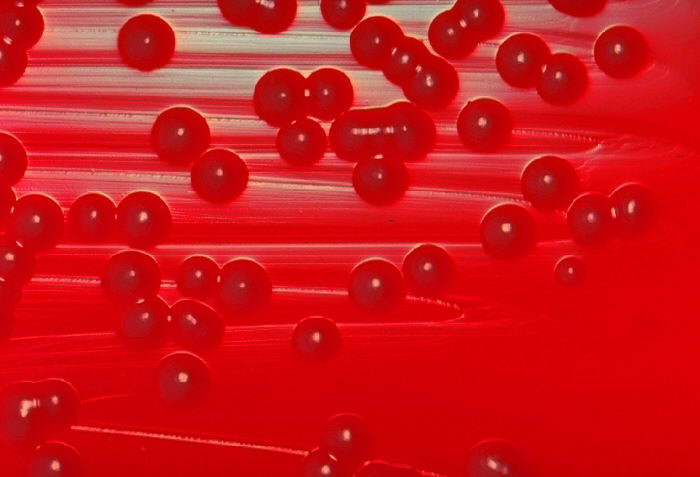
Blood agar plate culture of Flavobacterium meningosepticum.